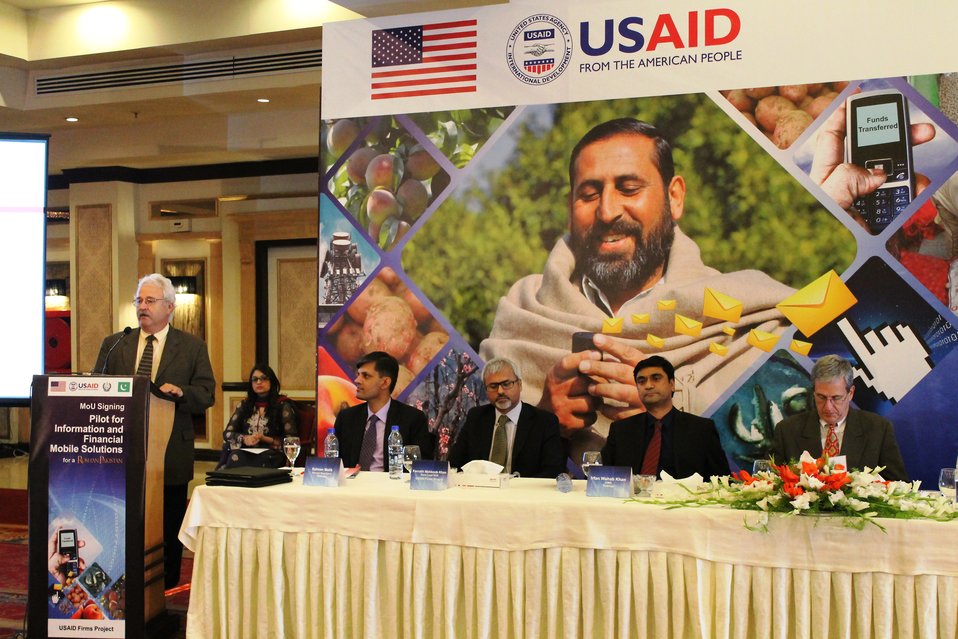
Pilot for Information and Financial Mobile Solutions - MoU Signing

Mr. Alan Davis, Director Economic Growth and Agriculture briefed the audience on USAID's overall contribution in Pakistan's economic and agricultural development.